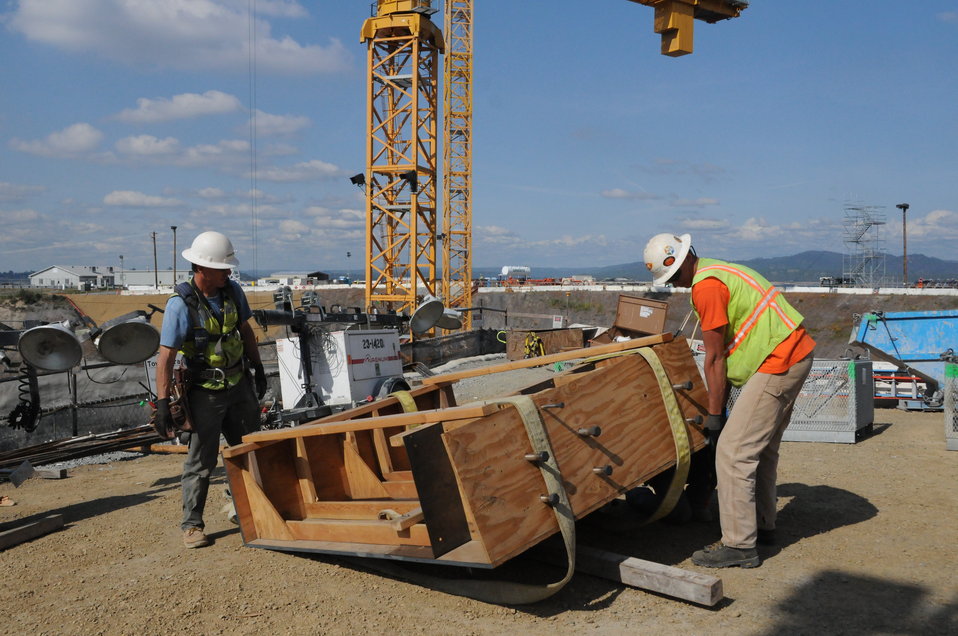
Rising control structure at Folsom Dam

Crane operators sitting more than 200 feet above the construction site deliver materials safely and efficiently to workers below at the Folsom Dam auxiliary spillway construction site in Folsom, Calif., March 27, 2013. When completed, the spillway's control structure - essentially, a second dam - will reach an overall height of 158 feet including the foundation.